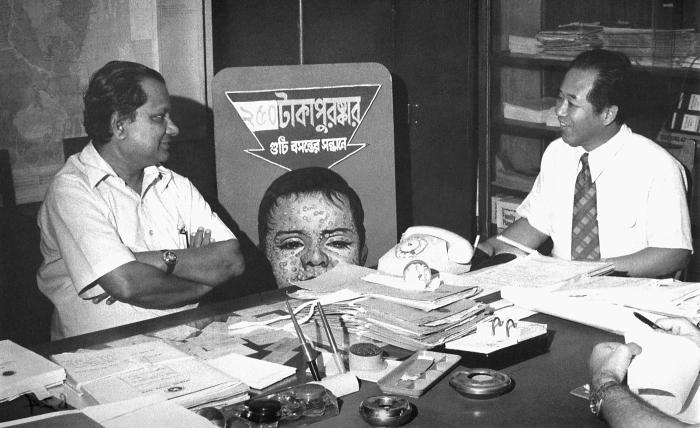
This 1975 image depicted the Secretary of Health, Dr. T. Hussein, discussing surveillance and containment efforts with World Health Organization representative Dr. Han, during Bangladesh's country wide smallpox eradication program. Support received from the country's governmental officials, and public health practitioners were two integral spokes of the wheel of success of the smallpox eradication efforts, which rid the country of this dreaded viral disease that had plagued the land for centuries.